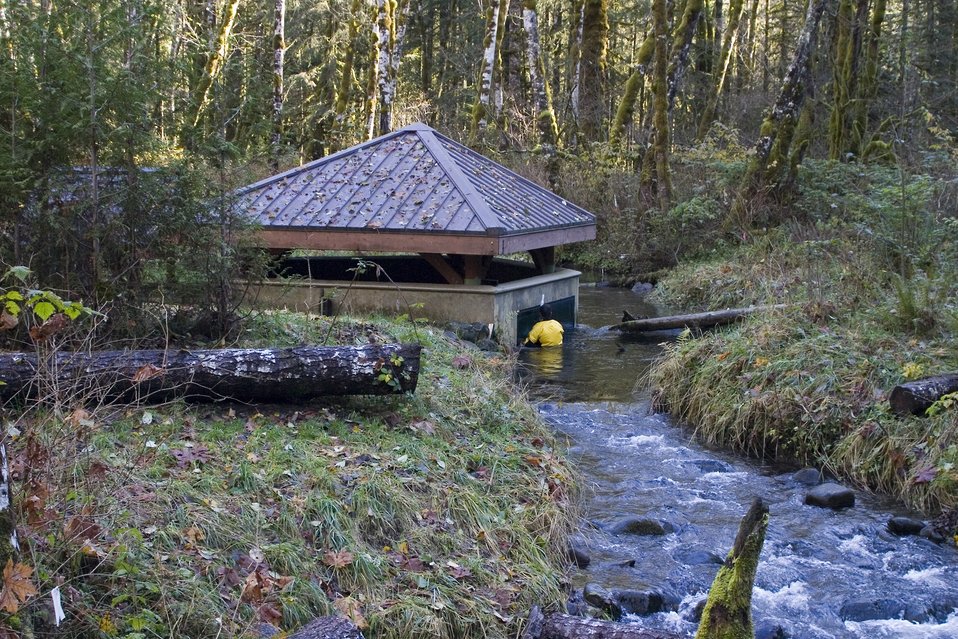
Kevin Davis, Wildwood Maintenance Worker, cleans the outside window of the salmon Viewing structure at BLM's Wildwood Recreation Area.